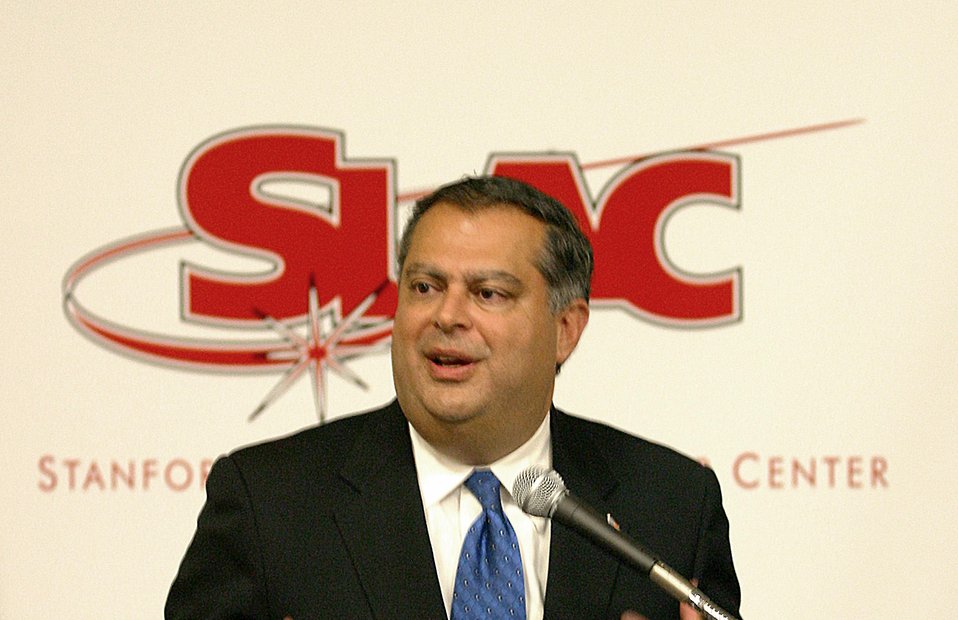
SECRETARY ABRAHAM SPEAKING TO STAFF OF THE STANFORD LINEAR ACCELERATOR CENTER, NOVEMBER 25, 2002.

SECRETARY ABRAHAM TOURED THE SLAC FACILITIES AND SPOKE TO THE STAFF ON NOVEMBER 25, 2002.